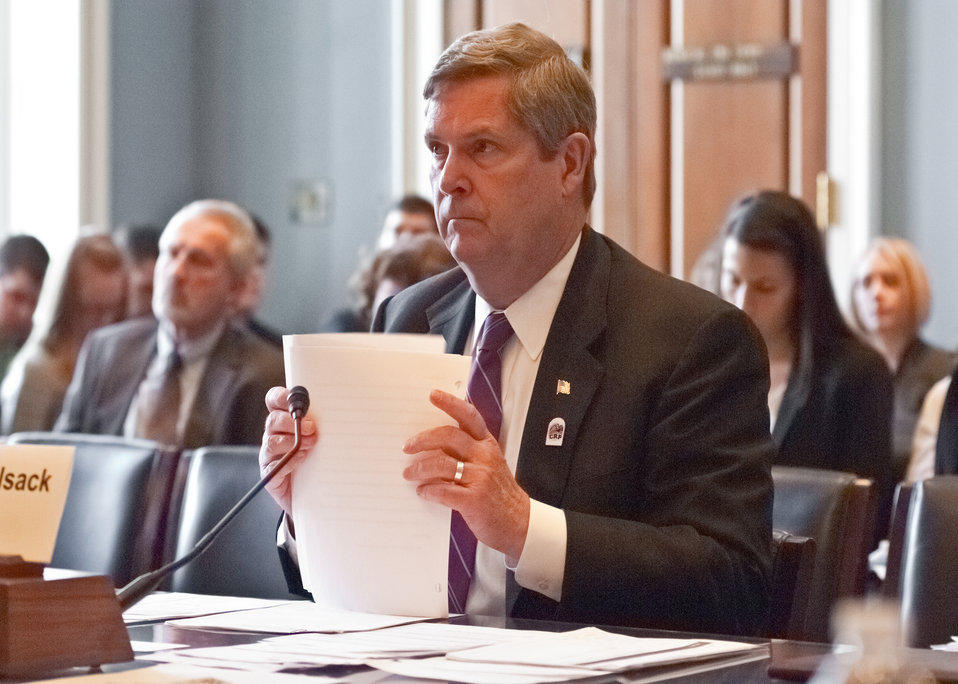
Agriculture Secretary Tom Vilsack prepares his statement prior to testifying on the “State of the Ag Economy” at a House Agriculture Committee hearing in the Longworth House Office Building in Washington, D.C., Thursday, February 17, 2011.